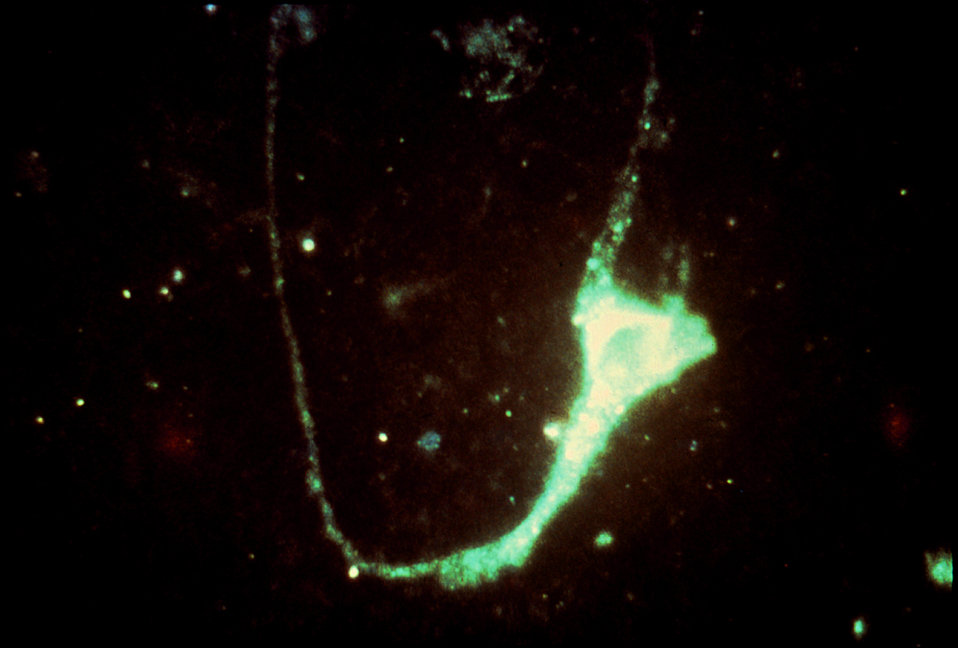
Using immunofluorescent stain, it was revealed that this brain tissue sample tested positive for herpes simplex virus; Mag. 40x.